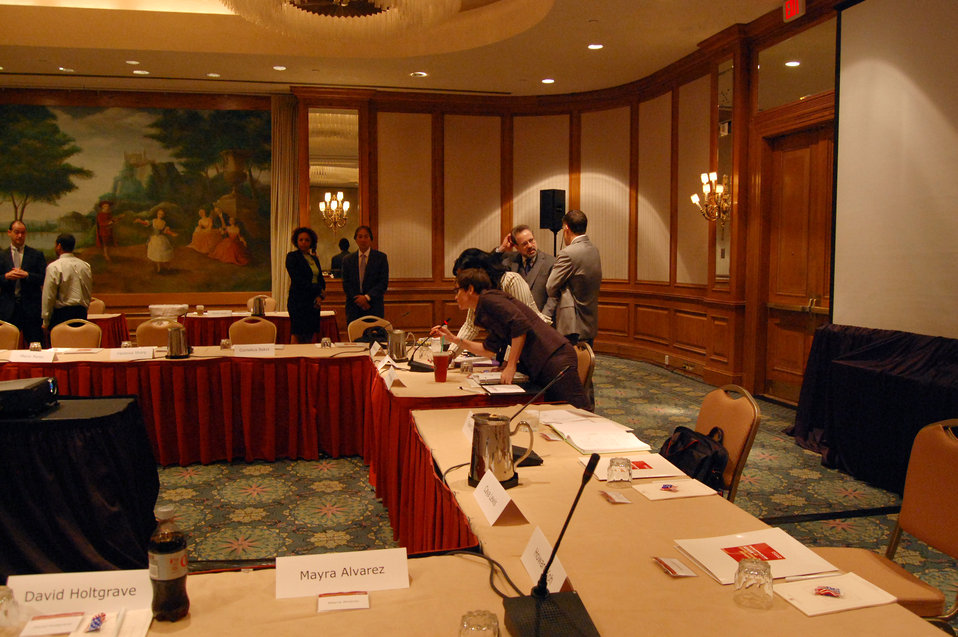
PACHA conf029